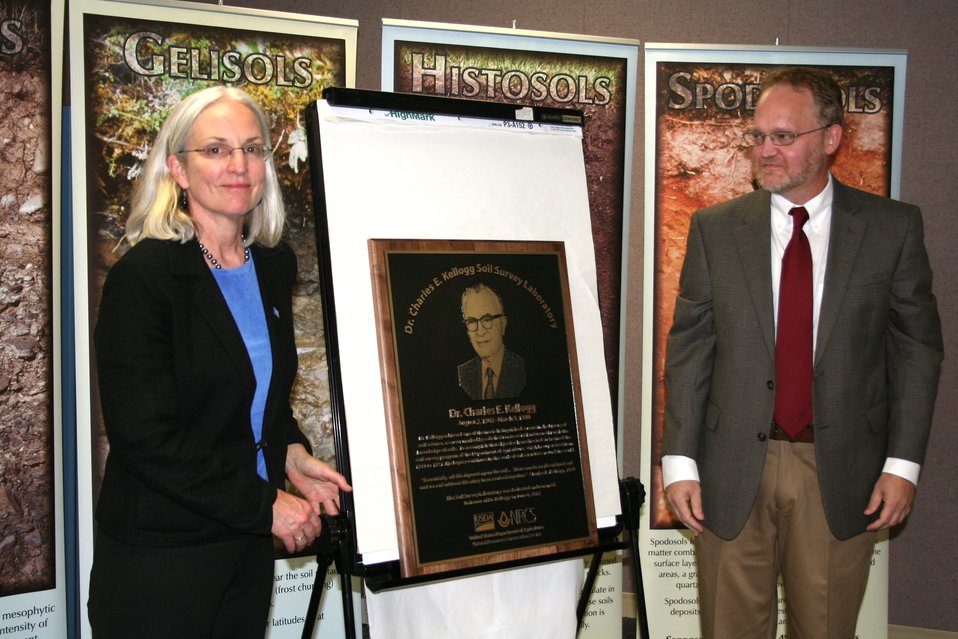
Agriculture Deputy Under Secretary for Natural Resources and Environment (NRE) Ann Mills and grandson of the late Dr. Charles E. Kellogg Stephen Kellogg unveil the plaque dedicating the Dr. Charles E. Kellogg Soil Survey Laboratory in Lincoln, NE on June 4, 2012. The laboratory is part of the U.S. Department of Agriculture’s (USDA) Natural Resource Conservation Service (NRCS) National Soil Survey Center and serves as the primary source for the Nation’s soil information.